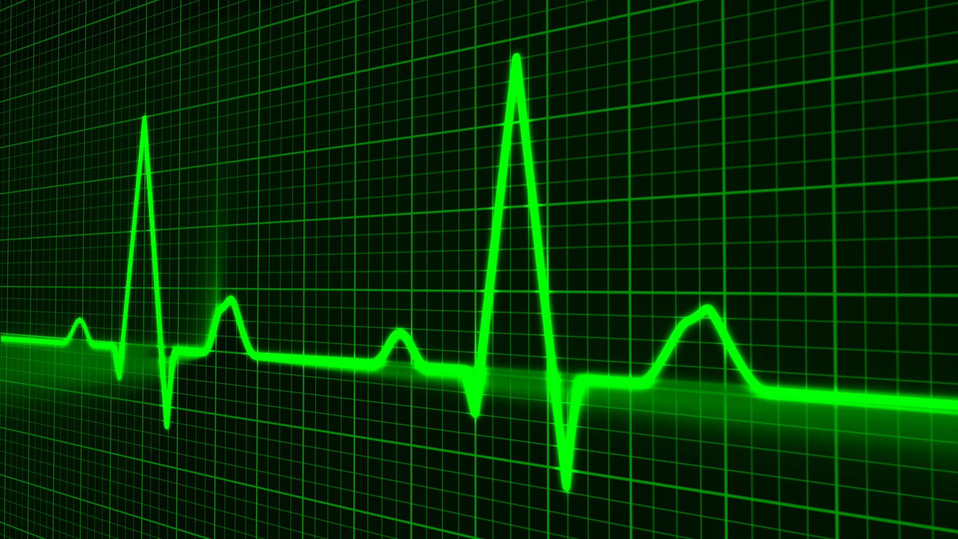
Heart cardiogram on the monitor.